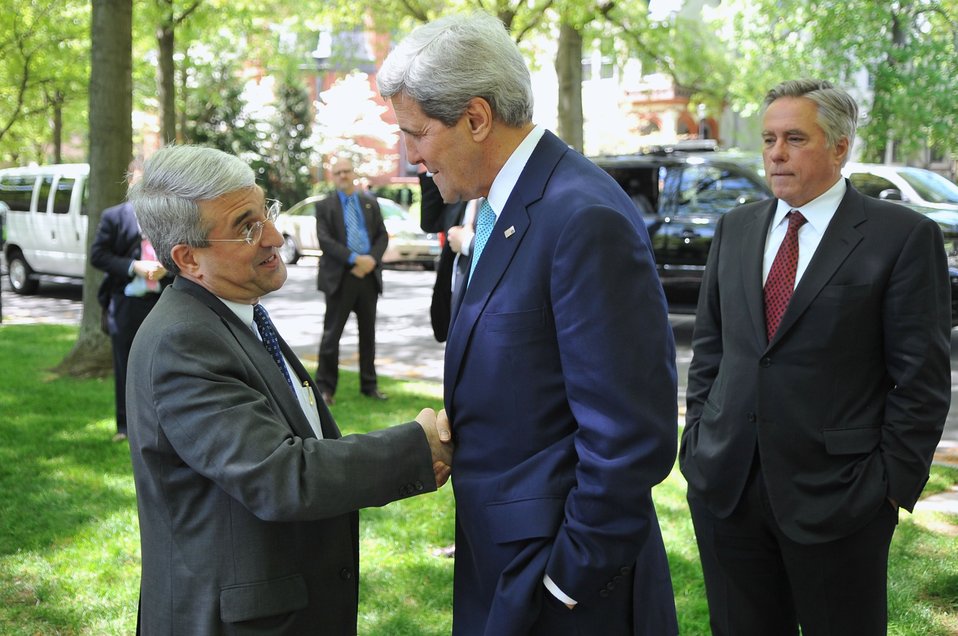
Yale University President Salovey Greets Secretary Kerry Arrives at Yale University

Yale University President Peter Salovey greets U.S. Secretary of State John Kerry and his 1966 classmate, State Department Senior Advisor David Thorne, as they arrive on campus in New Haven, Connecticut for Class Day ceremonies on May 18, 2014.